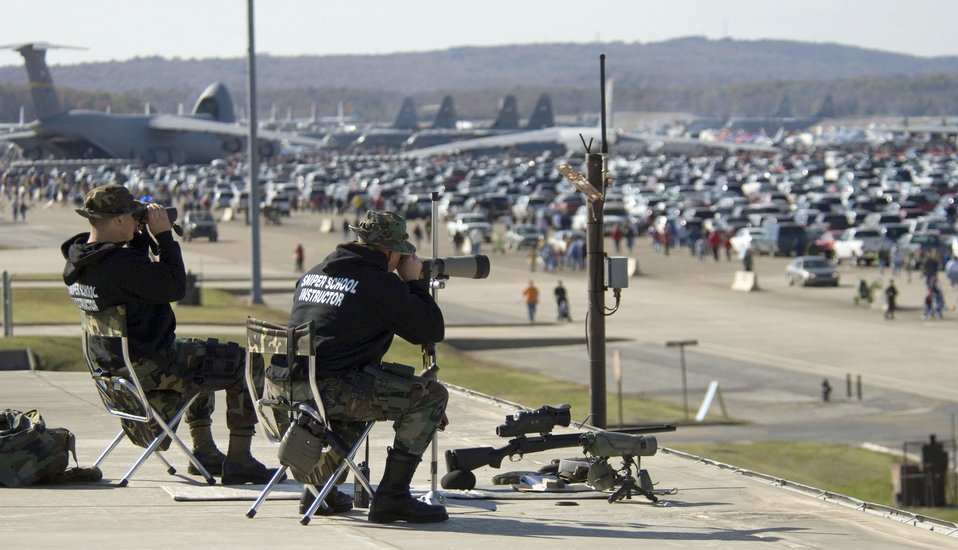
Keeping a watchful eye

Arkansas Air National Guard sniper school instructors keep an eye on the crowd Nov. 4 during a base open house at Little Rock Air Force Base, Ark. They are watching for any activity that might endanger spectators or Air Force resources.